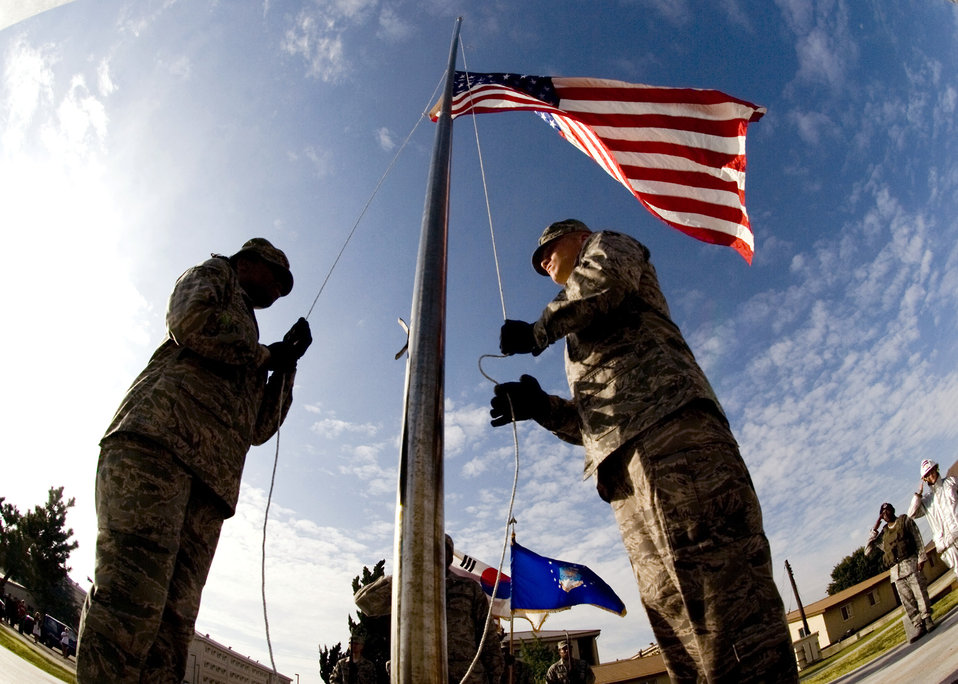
Rembering those who have fallen

Senior Airman Danielle Todman (left) and Airman 1st Class Kyle Detwiler post the colors during the September 11 Patriot Day Ceremony Sept. 11, 2009, at Kunsan Air Base, Republic of Korea. The ceremony acknowledged the courageous firefighters, police officers, emergency responders and others who risked their lives to save the victims of the tragic events of Sept. 11, 2001. The ceremony also paid tribute to the men and women of the U.S. Armed Forces who have served in the military, whether deployed or at home station, since these events.